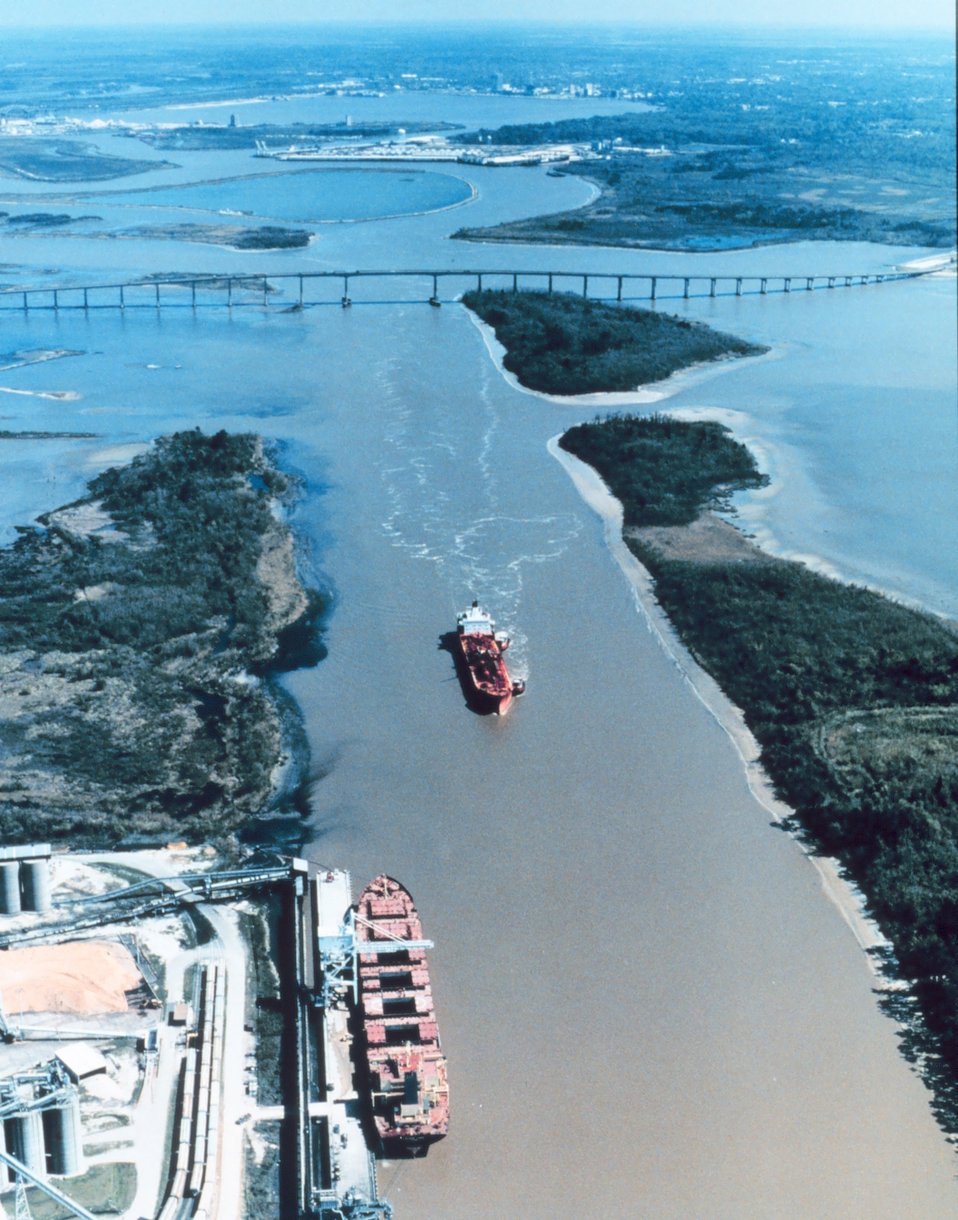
3013 North Latitude 9313 West Longitude.